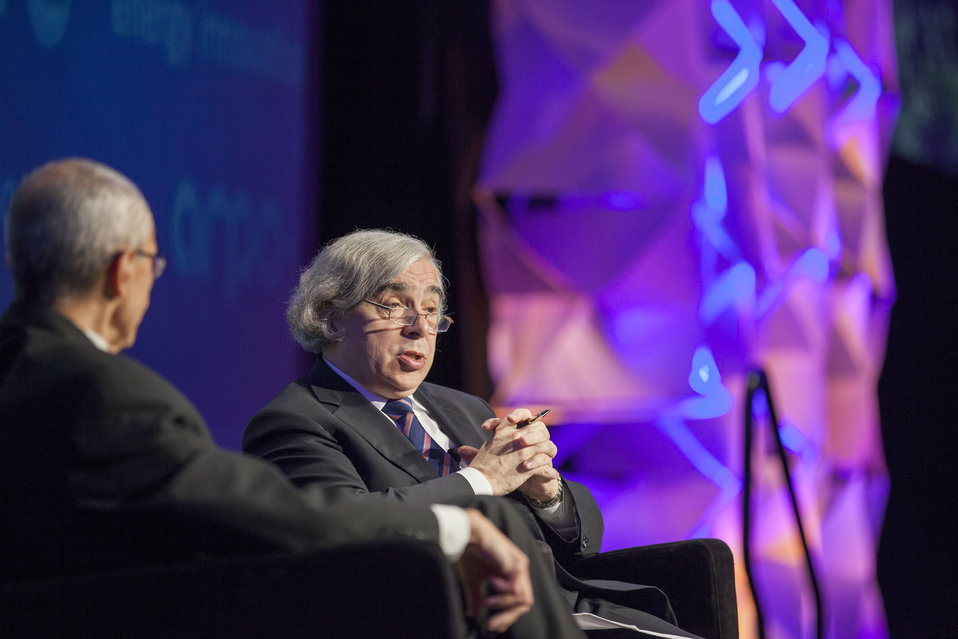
Secretary Moniz’s fireside chat with John Podesta covered topics ranging from the urgency to act on climate change to the important role innovation plays in the administration’s all-of-the-above energy strategy.